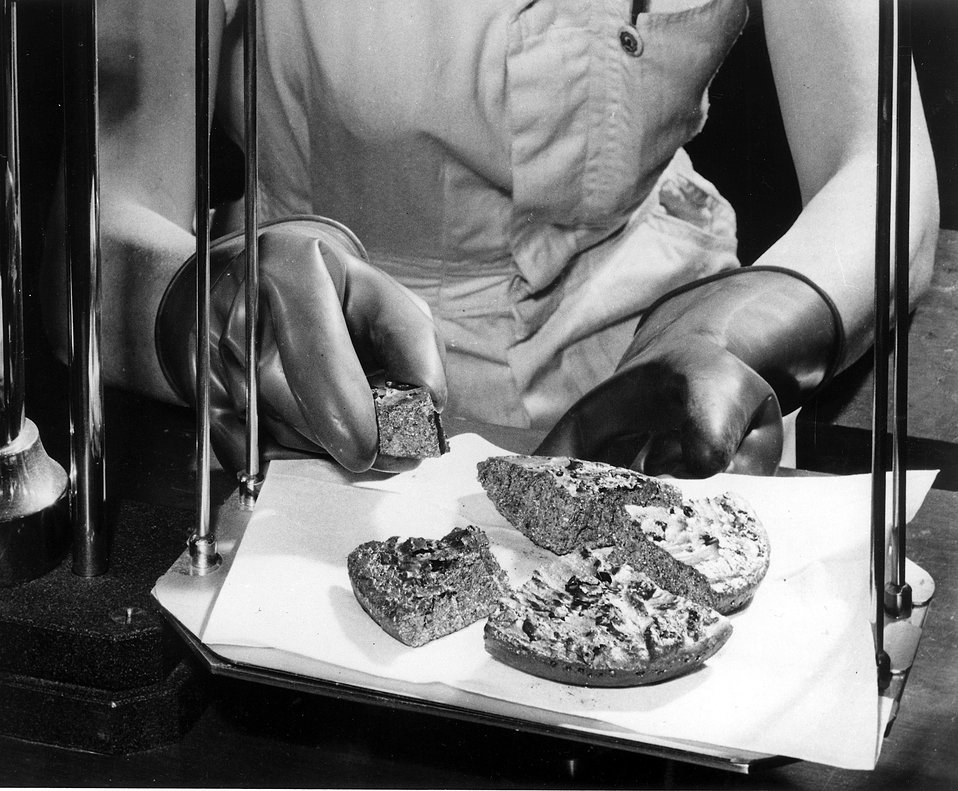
OAK RIDGE, TENNESSEE...A worker at the Atomic Energy Commission's Y-12 Plant at Oak Ridge, Tennessee, examines a biscuit of uranium metal which contains about 93 percent U-235. Circa 1967.